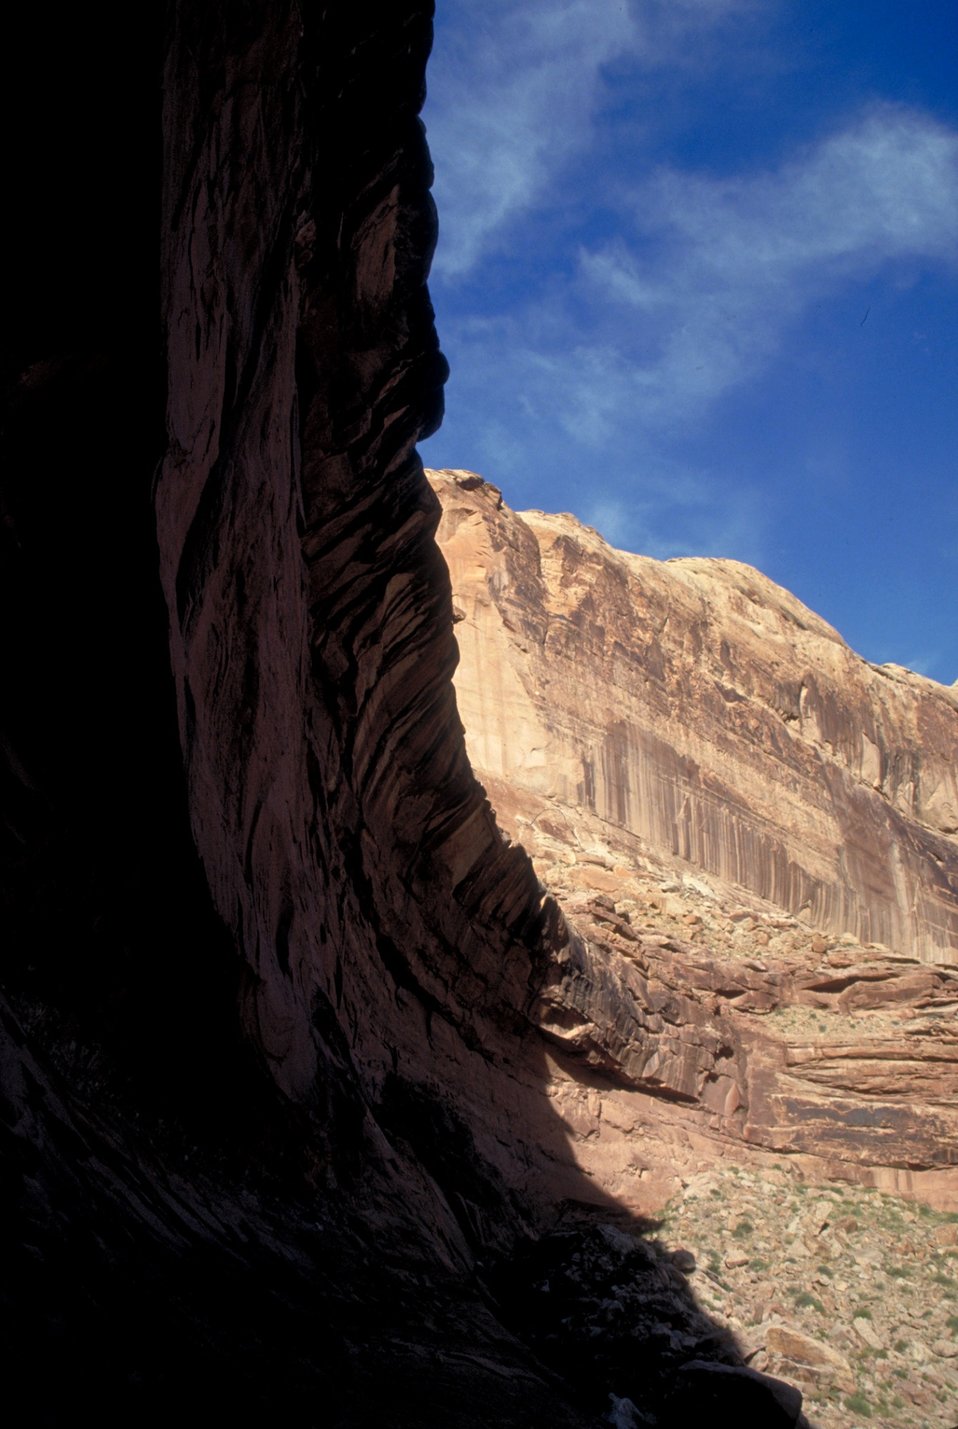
Black Dragon Wash near Green River, Utah.